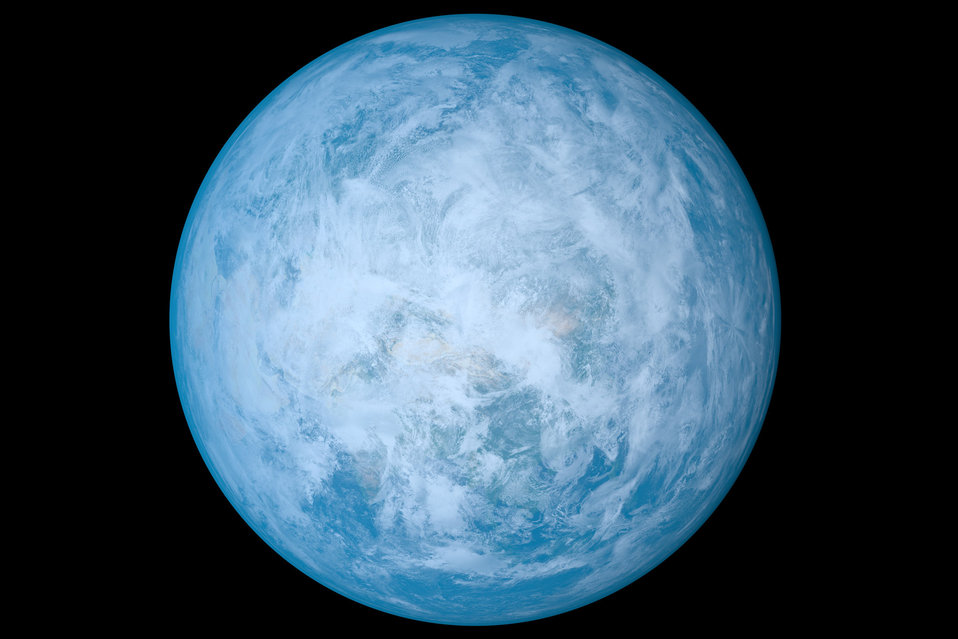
Earth in high definition

Earth as seen from space in high resolution.